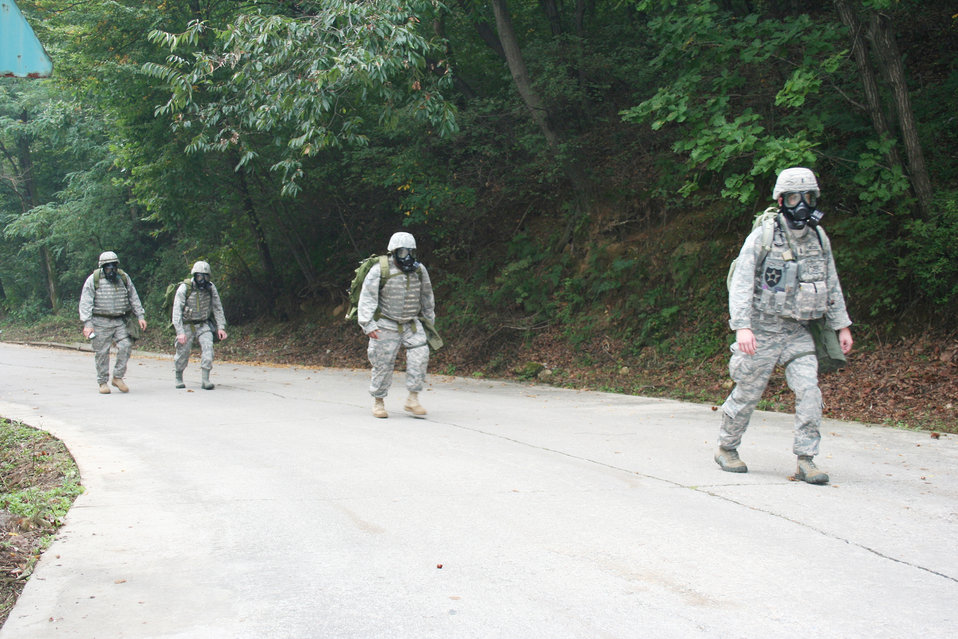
Weather warriors endure 'turbulent climb'

Det. 1 members ascend the hill while wearing their gas masks during a simulated chemical attack during Operation Turbulent Climb Dec. 5 at Camp Red Cloud, Republic of Korea. The exercise trained the Airmen to perform tactical weather tasks in a wartime environment.